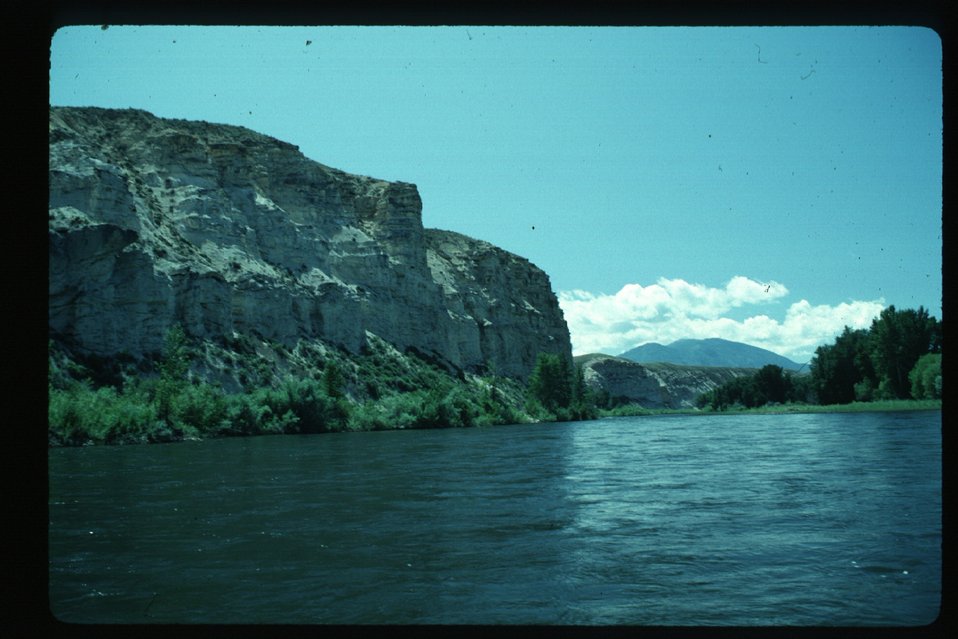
South Fork of Snake River Idaho Falls Field Office USRD Upper Snake River District